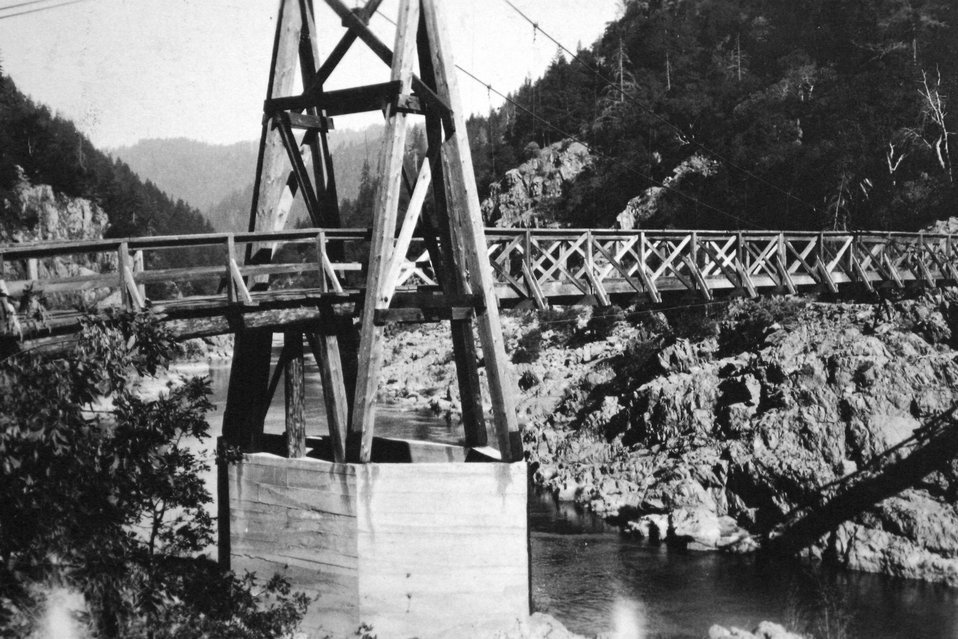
Sanderson's Bridge built in 1907 and destroyed by the 1927 flood. Concrete bridge footings remain on the river banks today.